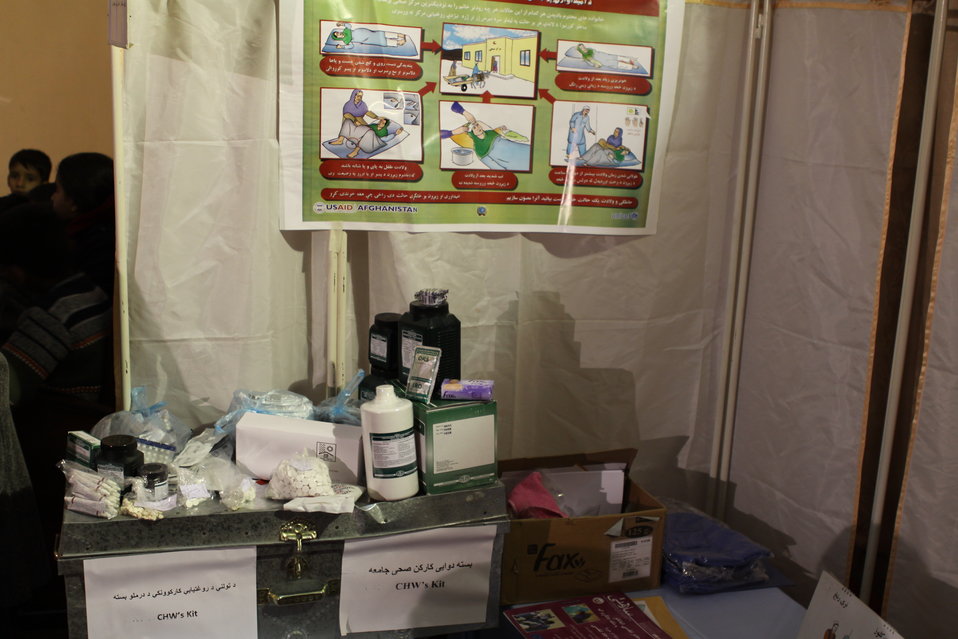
Community Health Workers Celebrated

Kabul, Afghanistan | December 5, 2010 — In support of the United Nations designated International Volunteer Day for Economic and Social Development, Afghanistan’s Ministry of Public Health celebrated its annual Community Health Worker Day today. Acting Minister of Public Health Dr. Suraya Dalil, USAID Senior Deputy Mission Director Robert Hellyer, other government officials, and international donors joined in recognizing the critical contribution of community health workers in Afghanistan and encouraging them to continue their voluntary support to their communities.
The event praised the contributions of the more than 22,000 volunteers throughout the country who deliver community level health-education, counseling, and services out of village health posts located in private homes. The Ministry of Public Health envisioned that community-based healthcare programs will actively encourage communities and families to adopt healthy lifestyles and behaviors, and provide families access to high quality and socially acceptable preventative medicine and life-saving services.
“We have 22,000 community health workers in Afghanistan that are able to implement the basic and standard medicines. They all have been trained through a job description,” said Minister Dalil. Addressing the health workers, she added, “I am proud and feel powerful that I have people like you.”
USAID-funded health projects collaborate closely with the Ministry of Public Health to improve the health and nutritional status of Afghans, provide quality primary healthcare, and promote healthy behaviors at the community and household-levels. USAID supported the training of more than 9,000 of the volunteer community health workers currently working in Afghanistan.
“On behalf of the American people, I congratulate the Community Health Workers for their diligence to gain the skills and knowledge necessary to serve their communities in this important role,” said USAID Senior Deputy Mission Director Hellyer. “USAID strongly supports community based health care and believes that quality community-based health services are essential to reaching Afghanistan’s Millennium Development Goals.”
To support the Basic Package of Health Services, USAID assisted in developing the community health worker training manual, helped train community health worker supervisors and master-trainers, facilitated in-service training, and produced and developed reporting tools, job aids, and education materials.